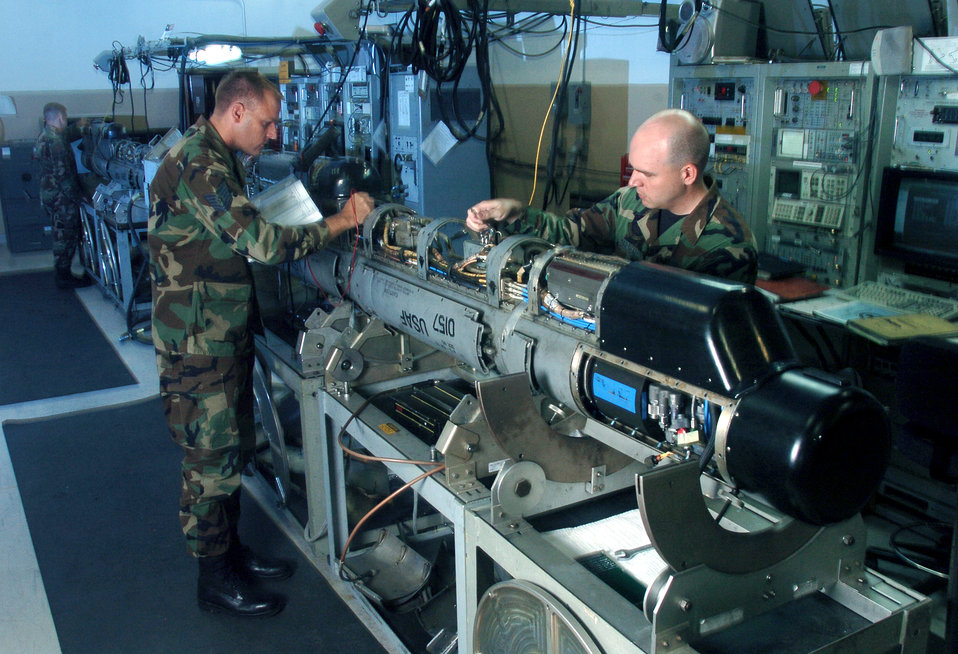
Protecting fighters

KUNSAN AIR BASE, South Korea -- Tech. Sgt. Brad Mikula (left) and Staff Sgt. Jesse Marshall inspect an electronic countermeasures pod here. The ECM technicians maintain the F-16 Fighting Falcons pods used to defeat sophisticated anti-aircraft defense systems. The Airmen are assigned to the 8th Maintenance Squadron.